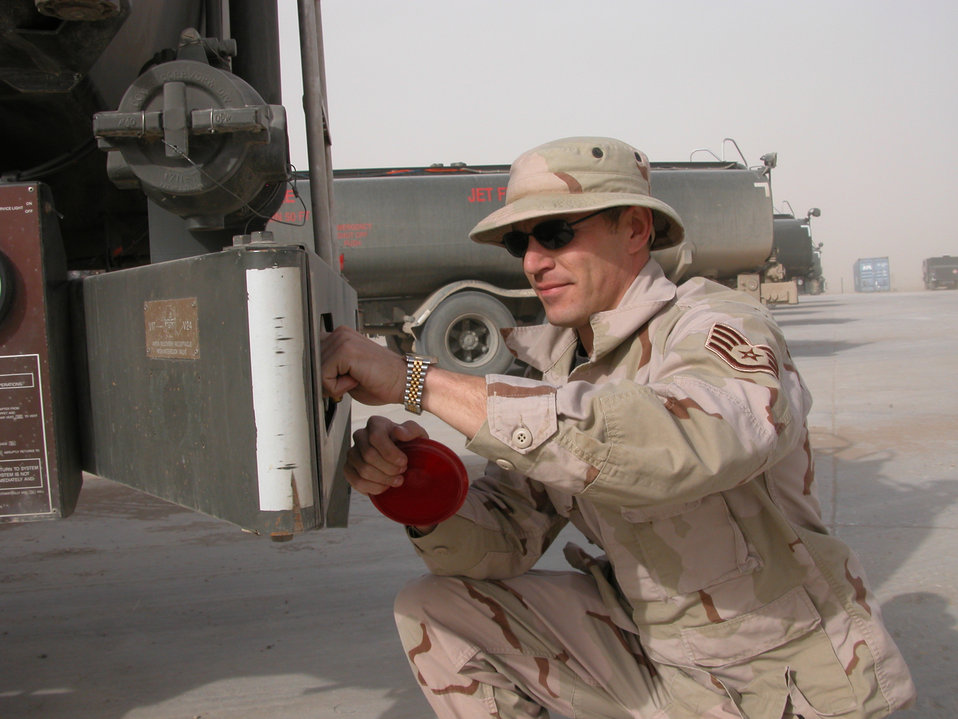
Nothing but the taillights

TALLIL AIR BASE, Iraq (AFPN) -- Staff Sgt. Luke Salkeld replaces a brake light on an R-11 refueling truck. The sergeant is the noncommissioned officer in charge of fuels preventive maintenance for the 407th Expeditionary Logistics Readiness Squadron's fuels flight. He is deployed here from Shaw Air Force Base, S.C.